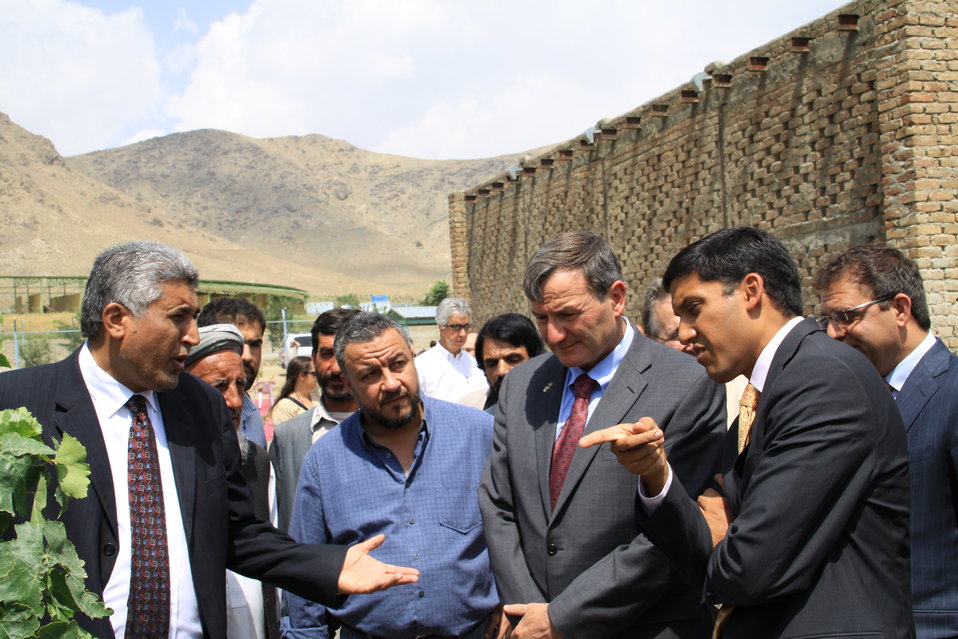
Badam Bagh Farm